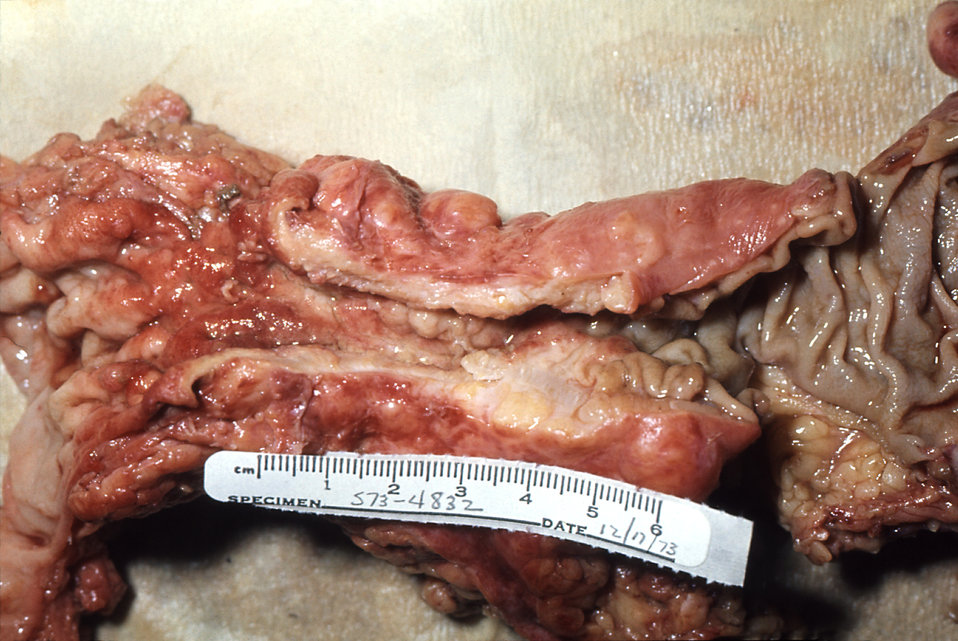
Gross pathology of adenocarcinoma, colon